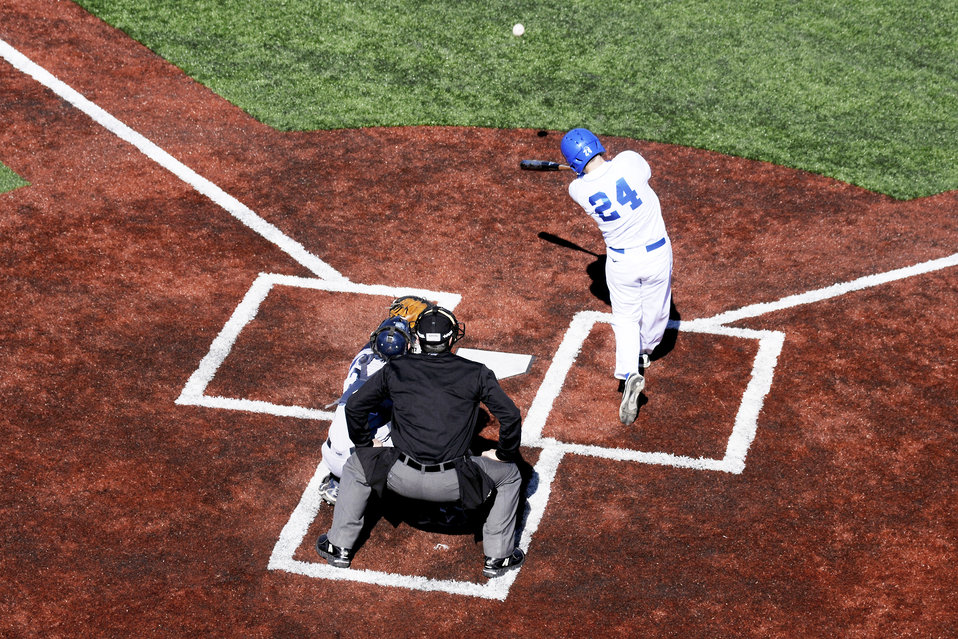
Falcons defeat Colorado School of Mines

Air Force senior Addison Gentry connects with the pitch during play against Colorado School of Mines March 16, 2010 at the U.S. Air Force Academy's Falcon Field in Colorado. Gentry went 2-to-4 on the day with three RBIs in the 12-10 victory